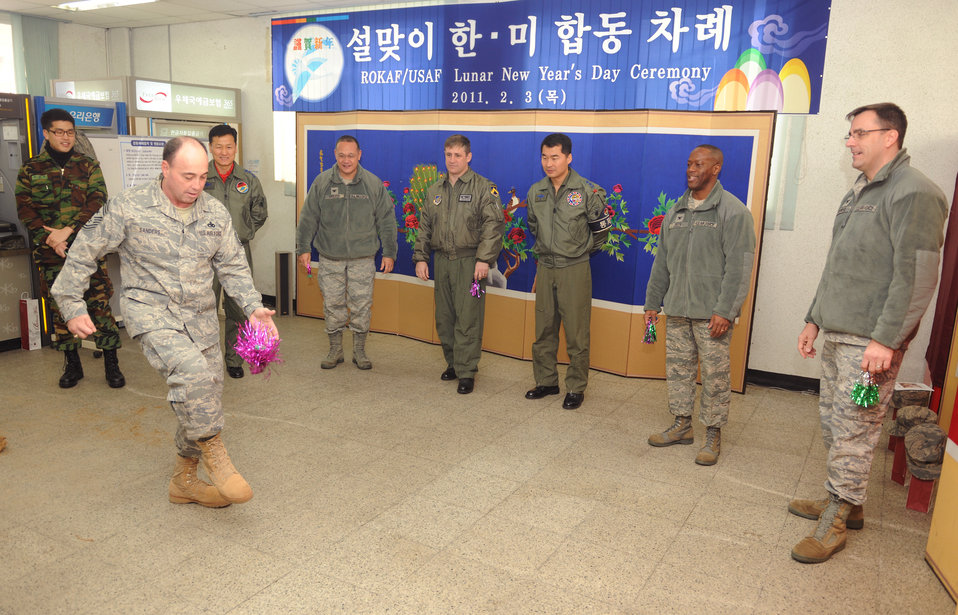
S. Korean Lunar New Year

Chief Master Sgt. James Sanders plays the traditional Korean game of chegi during a Lunar New Year ceremony Feb. 3, 2011, in the South Korean air force base exchange. The combined 8th Fighter Wing and South Korean air force 38th Fighter Group ceremony included a memorial service, ceremonial bowing, a traditional Korean breakfast and traditional games. Chief Sanders is the 8th Fighter Wing command chief.